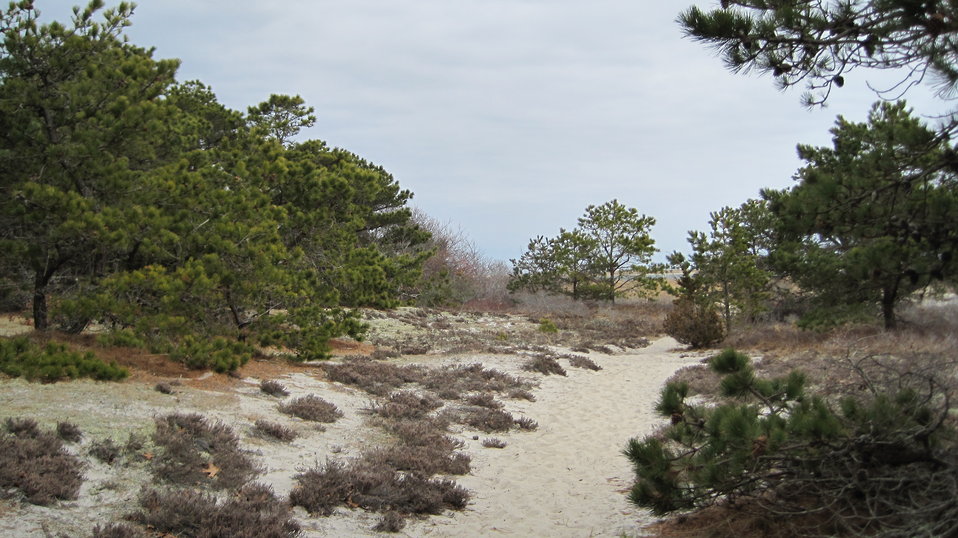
Monomoy National Wildlife Refuge

The 3/4 mile Morris Island Trail takes visitors through a variety of coastal habitats.

Credit: Keith Shannon/USFWS

Monomoy National Wildlife Refuge is part of the Eastern Massachusetts National Wildlife Refuge Complex.